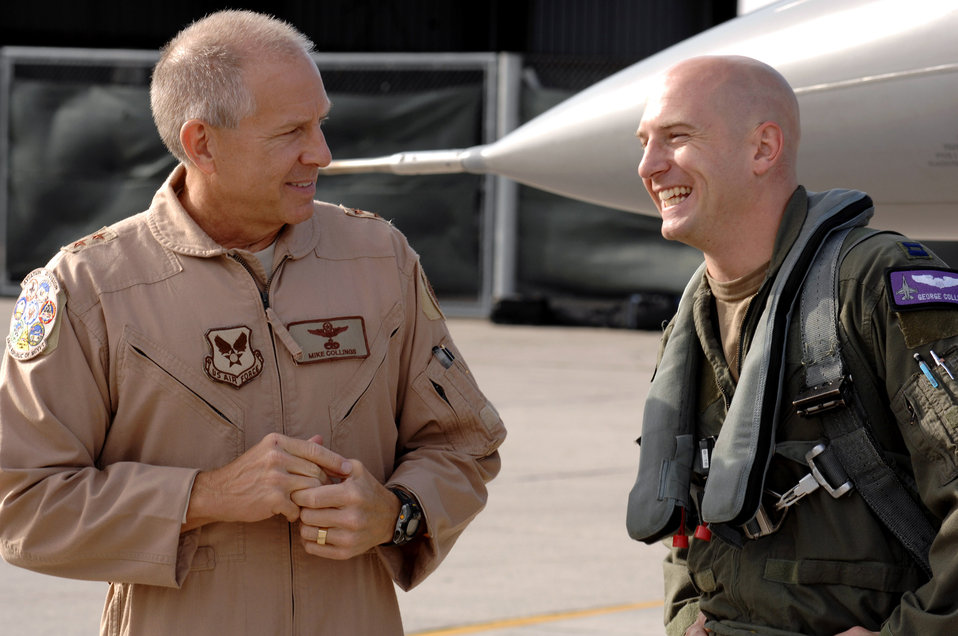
Father pins Distinguished Flying Cross on son

A surprised Capt. George Collings greets his father, Maj. Gen. Michael Collings, the senior U.S. defense representative to Egypt, on the flightline Oct. 29. General Collings flew into Aviano Air Base, Italy, to present Capt. Collings with the medal for distinguishing himself by extraordinary achievement while participating in aerial flight as an F-16 pilot with the 510th Expeditionary Fighter Squadron based out of Balad Air Base, Iraq.